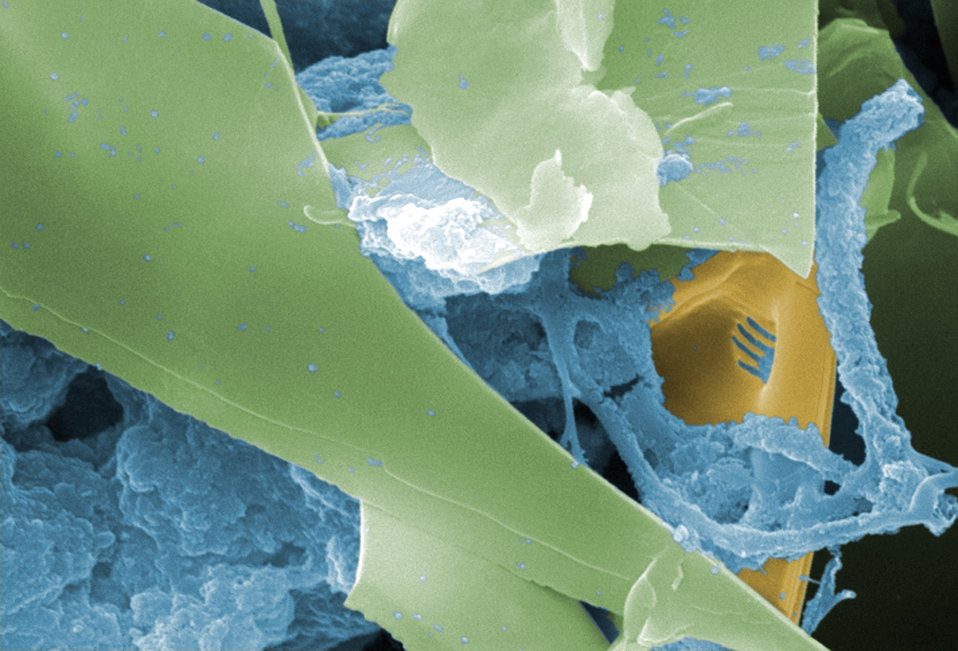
This digitally-colorized scanning electron micrograph (SEM) of an untreated water specimen extracted from a wild stream mainly used to control flooding during inclement weather, revealed the presence of unidentified organisms, which included bacteria, protozoa, and algae.